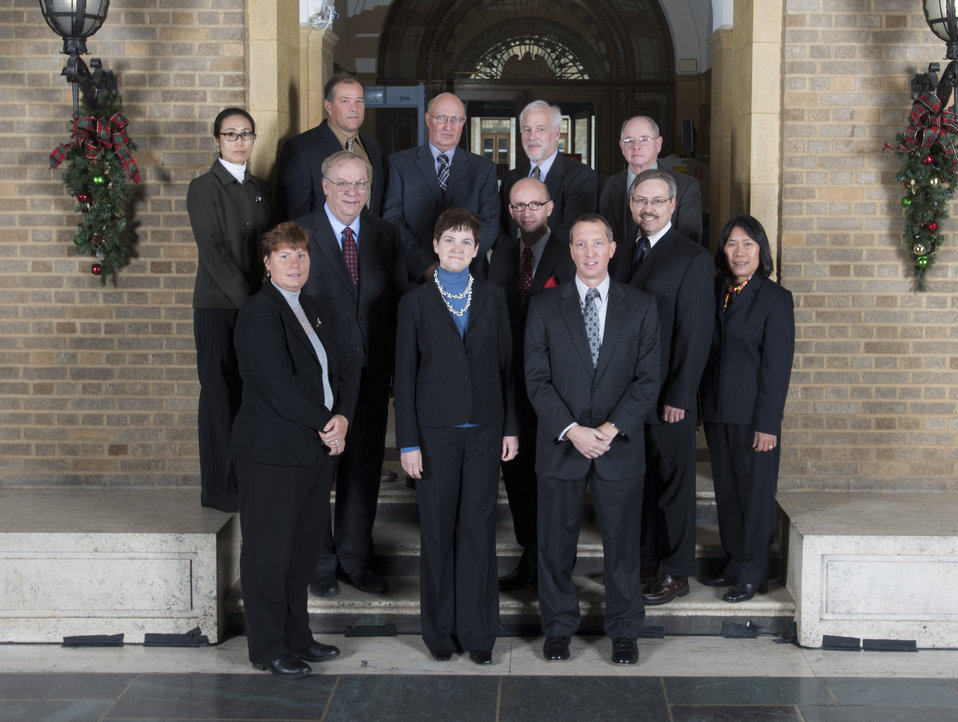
Agriculture Deputy Secretary Krysta Harden stands with the Edgewood Chemical Biological Center, Agent Chemistry Team, U.S. Army, from Aberdeen Proving Ground in Maryland on the patio at the U.S. Department of Agriculture (USDA) in Washington, D.C. on Wednesday, Dec. 11, 2013. The team received the Secretary’s Honor Award for partnering with the U.S. Department of Agriculture (USDA) to conduct critical chemical threat agent research to ensure that the Nation’s food supply is safe and reliable.